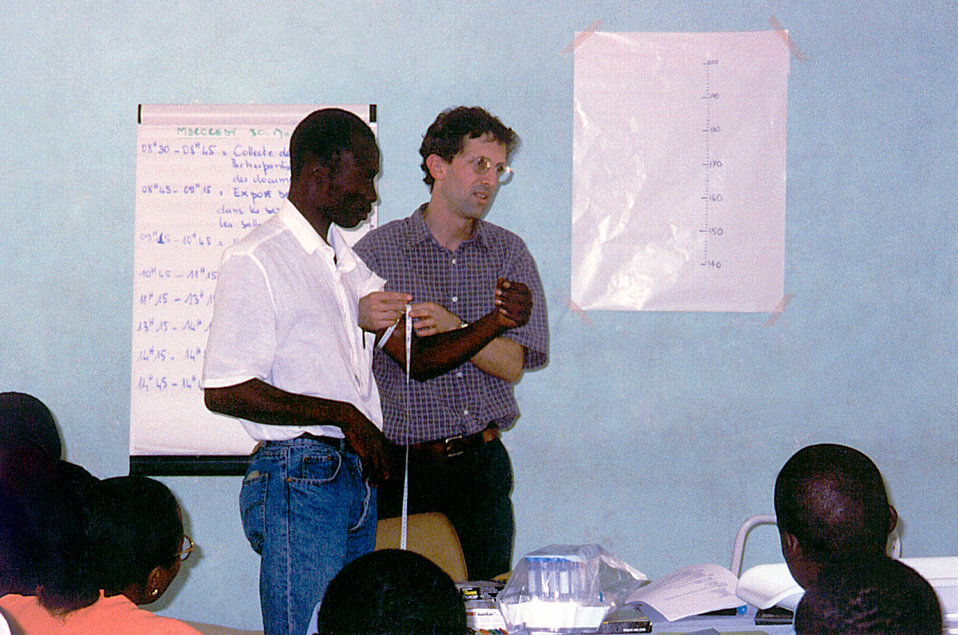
This was EIS Officer Robert Newman (standing Rt), of the Malaria Epidemiology Branch, DPD, NCID in a Burkina Faso classroom.